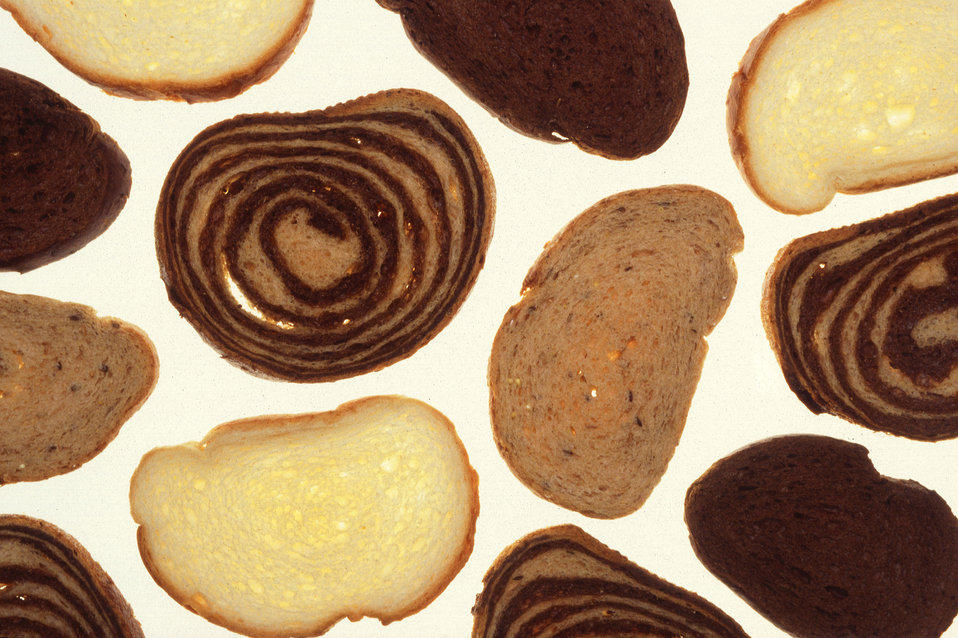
Leavened bread has been around since the days of ancient Egypt, Babylon and Greece. Then, as now, it was made from wheat, or from a mixture of wheat and rye. The elastic gluten in wheat is essential for bread to rise. For 50 years, the U.S. Department of Agriculture (USDA) Agricultural Research Service (ARS) laboratories have worked with all segments of the industry to help provide consumers with uniform, flavorful, nutritious bread and other wheat products. USDA ARS scientists have identified and isolated wheat proteins not previously known to exist and that these proteins-gliadin and glutenin-contain a specific chemical structure that affects mixing properties of flours in forming dough. They discovered the role of fatlike constituents in flour in controlling volume of bread and size of cookies. They found that certain water-soluble proteins called albumins are as essential as gluten in producing a good loaf of bread.